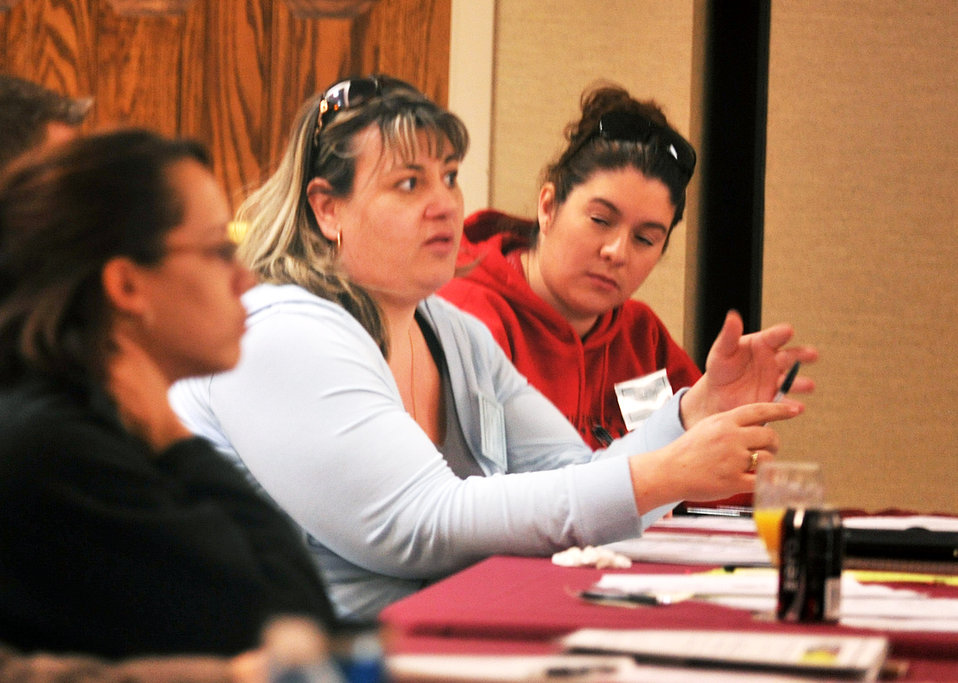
STOMP brings together parents, educators

Amila Smith speaks about her experience of dealing with special-needs situations at a Specialized Training of Military Parents workshop Jan. 27, 2011, at Moody Air Force Base, Ga. The mission of STOMP is to empower military parents, individuals with disabilities and service providers with knowledge, skills and resources.